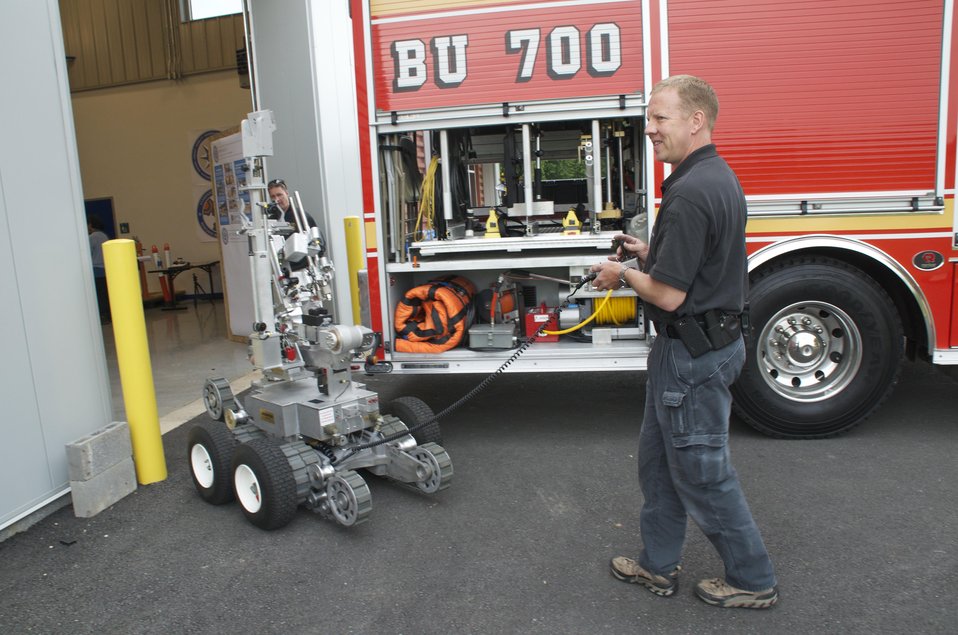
Robot and Bomb Squad Member

One of the first visitors to the NIST Robot Test Facility, the Montgomery County, Md., Bomb Squad supplied its fleet of bomb disposal
robots to assist in collecting performance data to evaluate the robots’ ability to meet the challenges presented by the test methods.

Development of test methods at the NIST Robot Test Facility is funded in part by the NIST Office of Law Enforcement Standard's Counterterrorism and Response Technologies program.